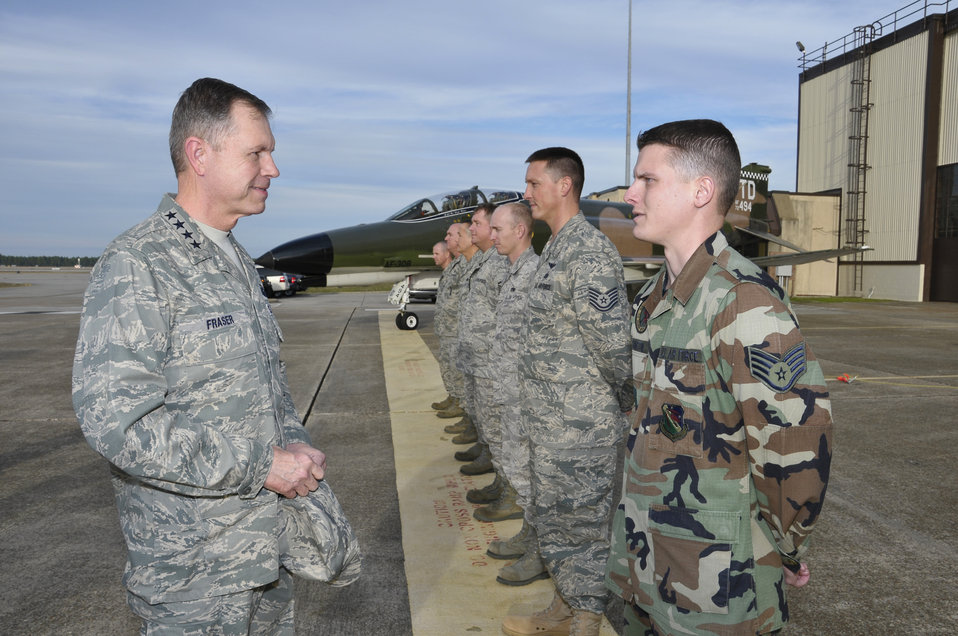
Top ACC leader visits Tyndall

Gen. William M. Fraser III meets Staff Sgt. Joseph E. Johnston and several other NCOs during a visit Jan. 28, 2010, to Tyndall Air Force Base, Fla. General Fraser is the commander of Air Combat Command. Sergeant Johnston is from the 53rd Test Support Squadron.